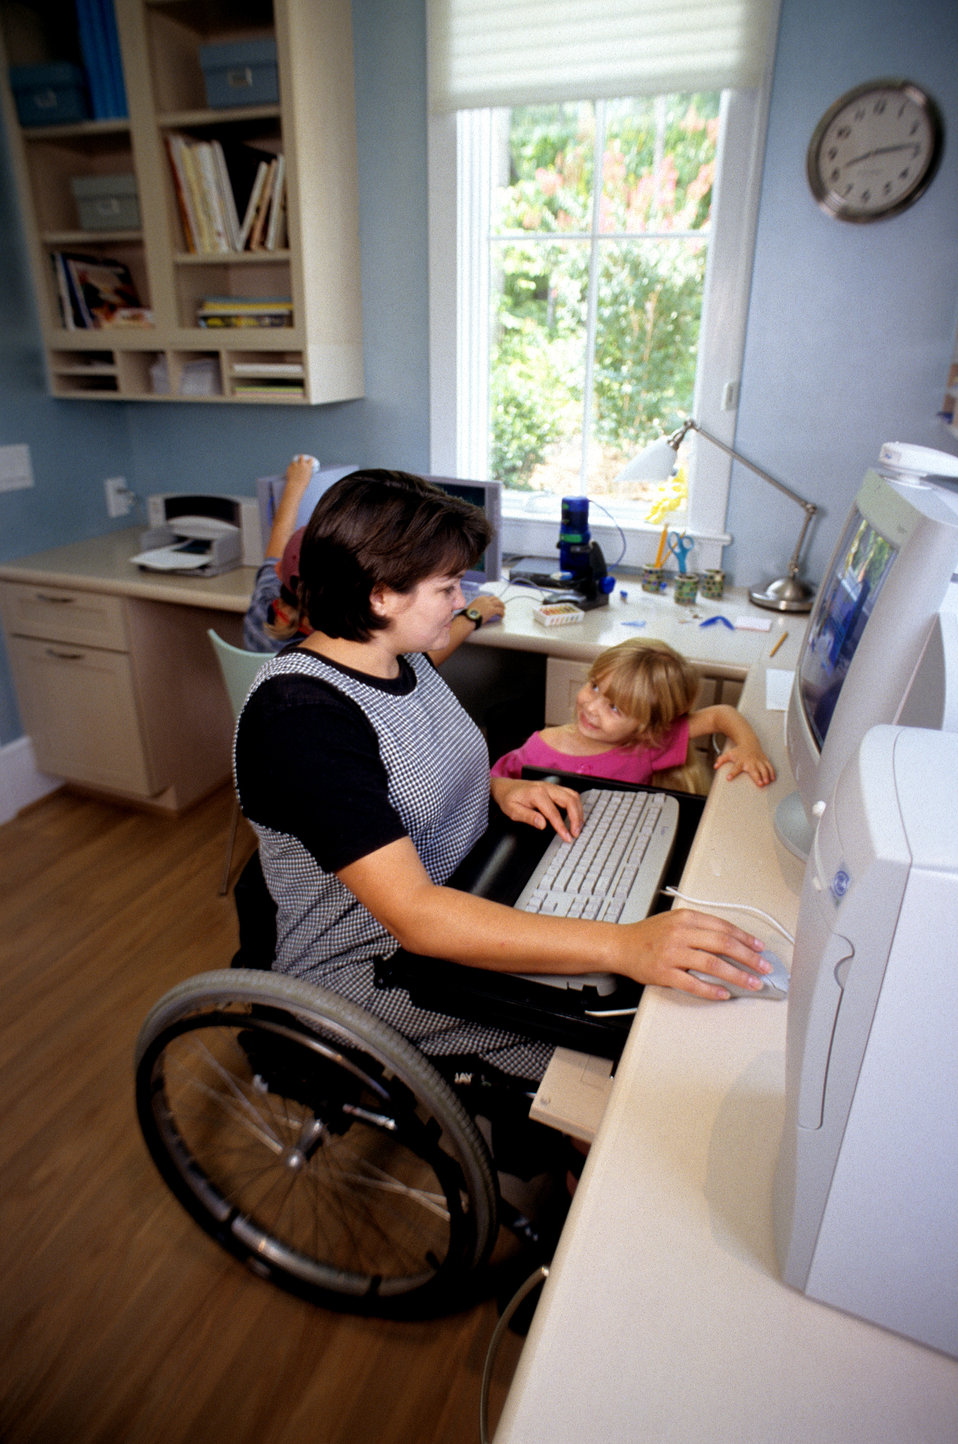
This 2000 image depicted a wheelchair-seated woman seated at her home computer workstation, while two children, a young girl and boy, were present in the background. The inclusion of the mobility-impared woman, and the two children showed that by carefully planning a layout and storage design, this in-home office was arranged in order to conveniently accommodate a wide range of users. The work counter accommodated different types of seated users and age groups. Also, the children's presence showed this to be an example of how good design could facilitate intergenerational interaction.